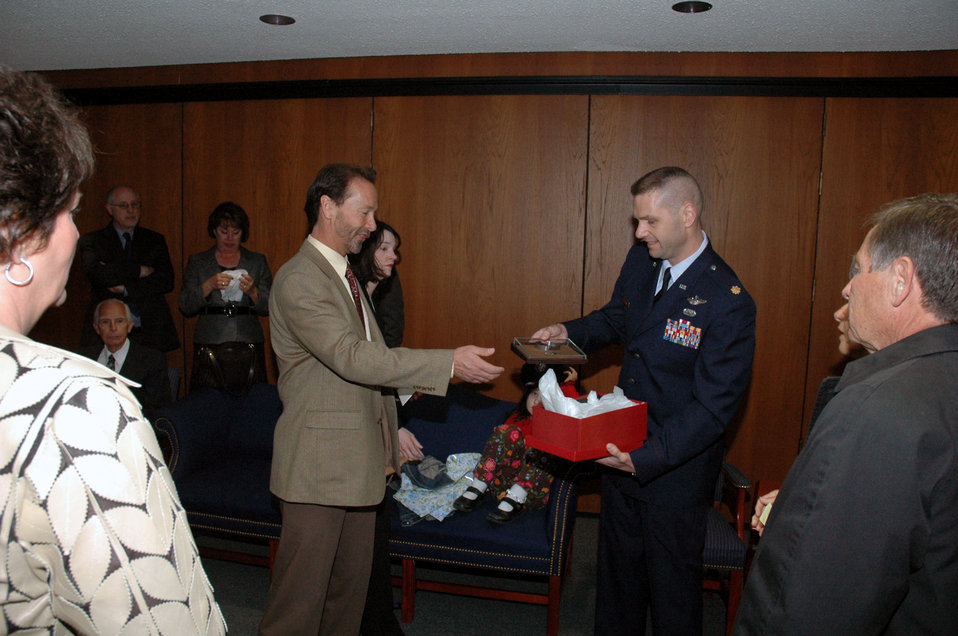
POW/MIA bracelet presented to family

Maj. Phil Heseltine presents a prisoner of war/missing in action bracelet he wore for 18 years to the Chuck Woods, son of Maj. Robert F. Woods, whose name is on the bracelet, during the funeral for Major Woods April 9 at Arlington National Cemetery in Virginia. Mr. Woods then presented the bracelet to his own son. Major Heseltine is the executive officer for the Air Force Expeditionary Center commander at Fort Dix, N.J.